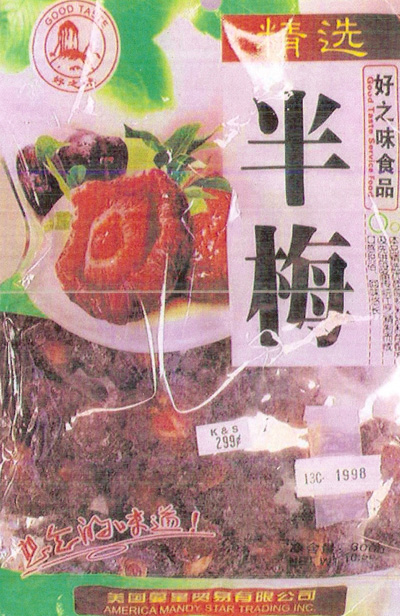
RECALLED – Plums

September 27, 2013 – Product Recall – Mandy Star Trading Inc. Is Issuing An Alert On Undeclared Sulfites In 'Good Taste' Brand Plum.